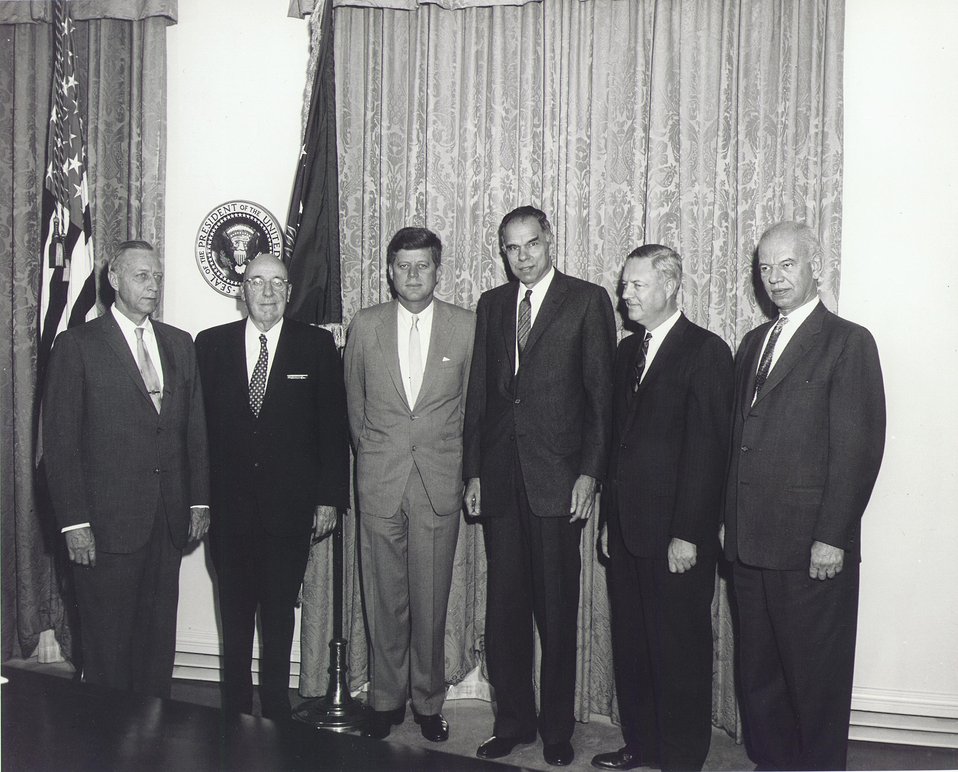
Fermi Award Ceremony for Dr. Bethe in Washington on Dec. 1, 1961.